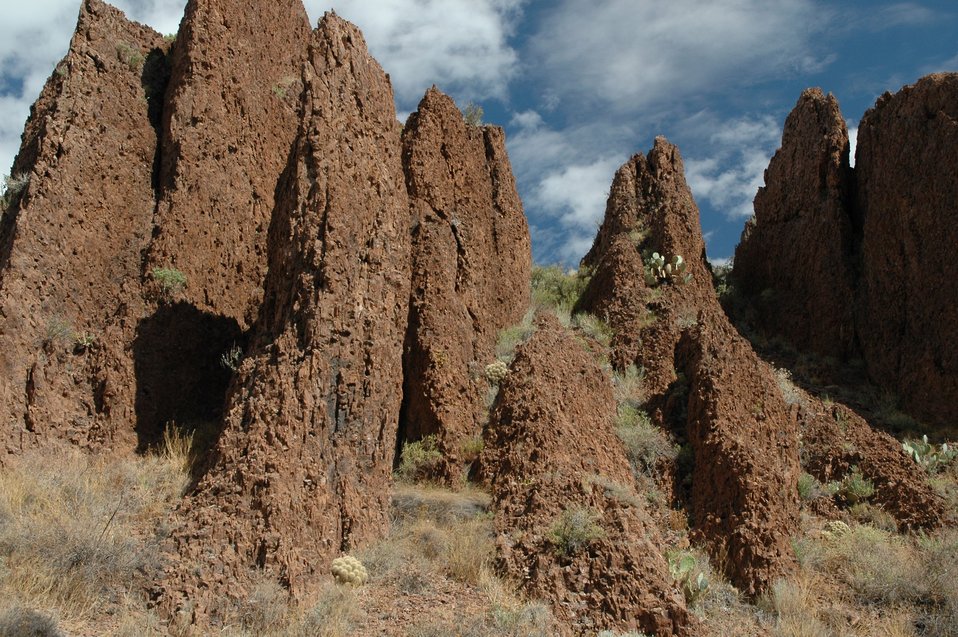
Chupadera Trail